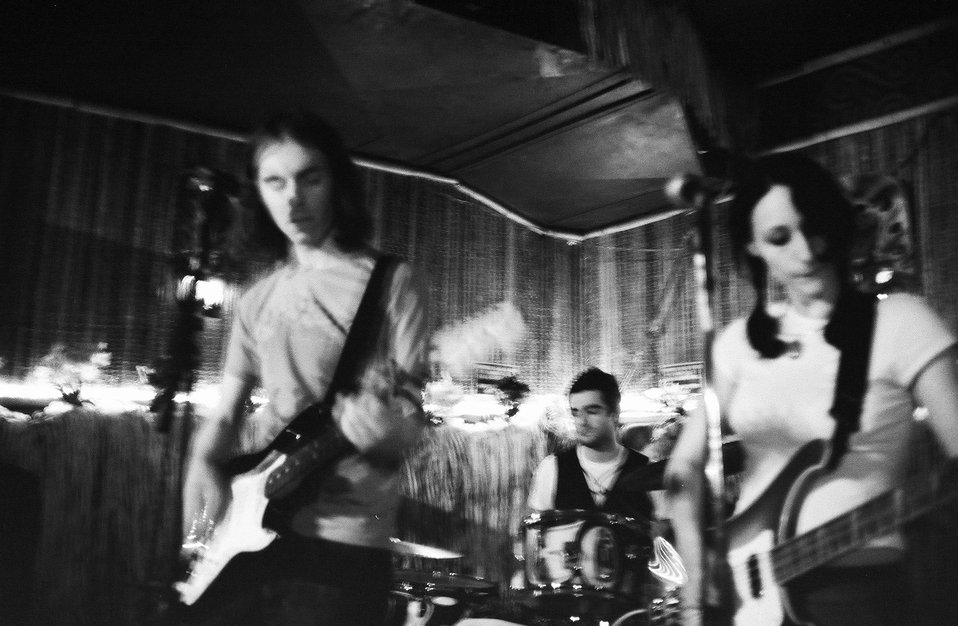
Sky Picnic- Live